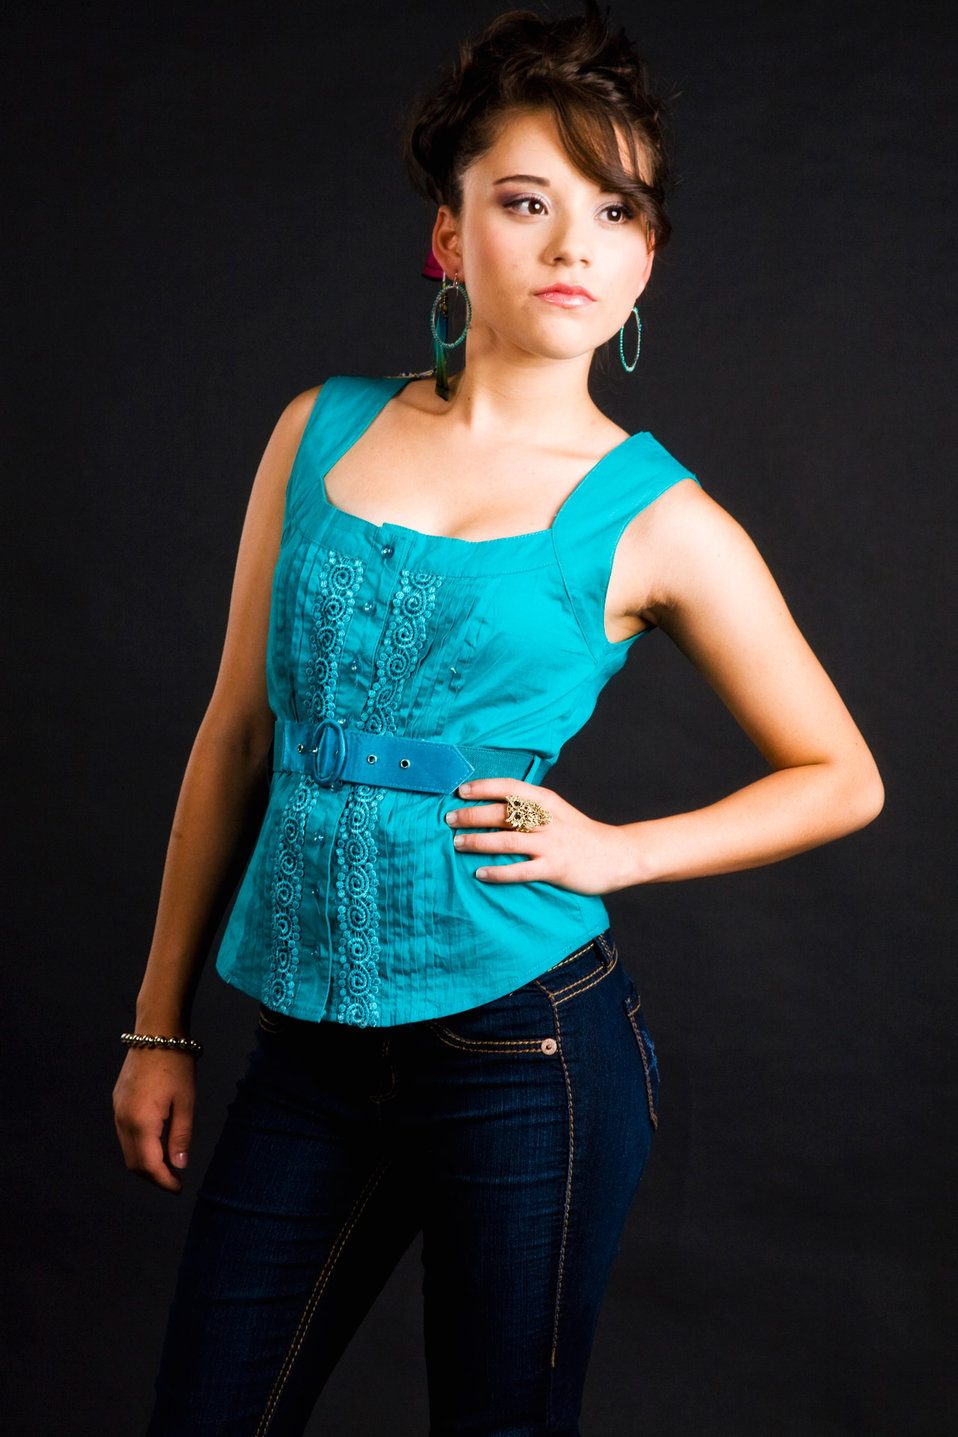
Mairani cuevas.